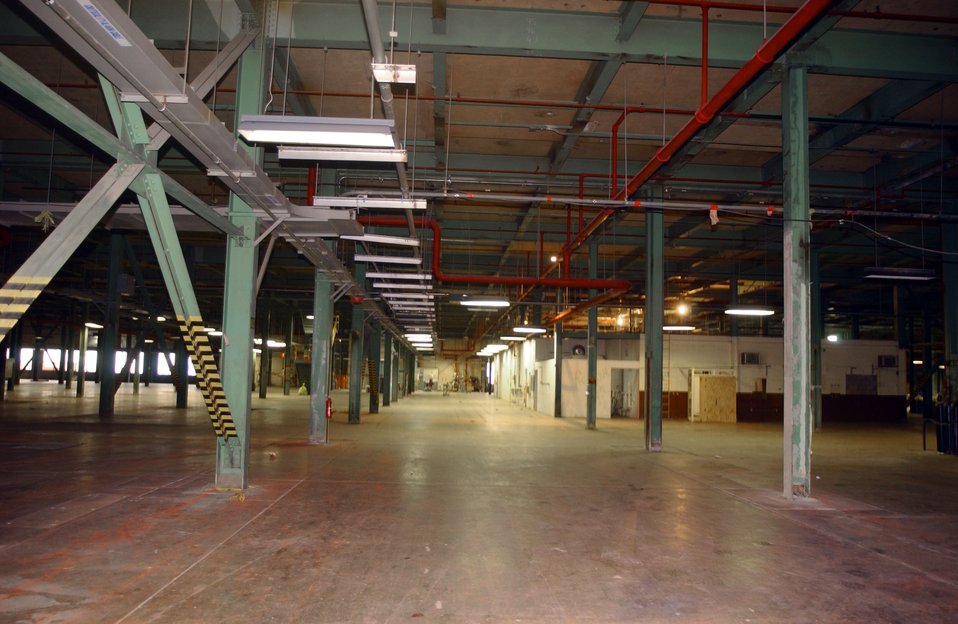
K-31 after (Oak Ridge)